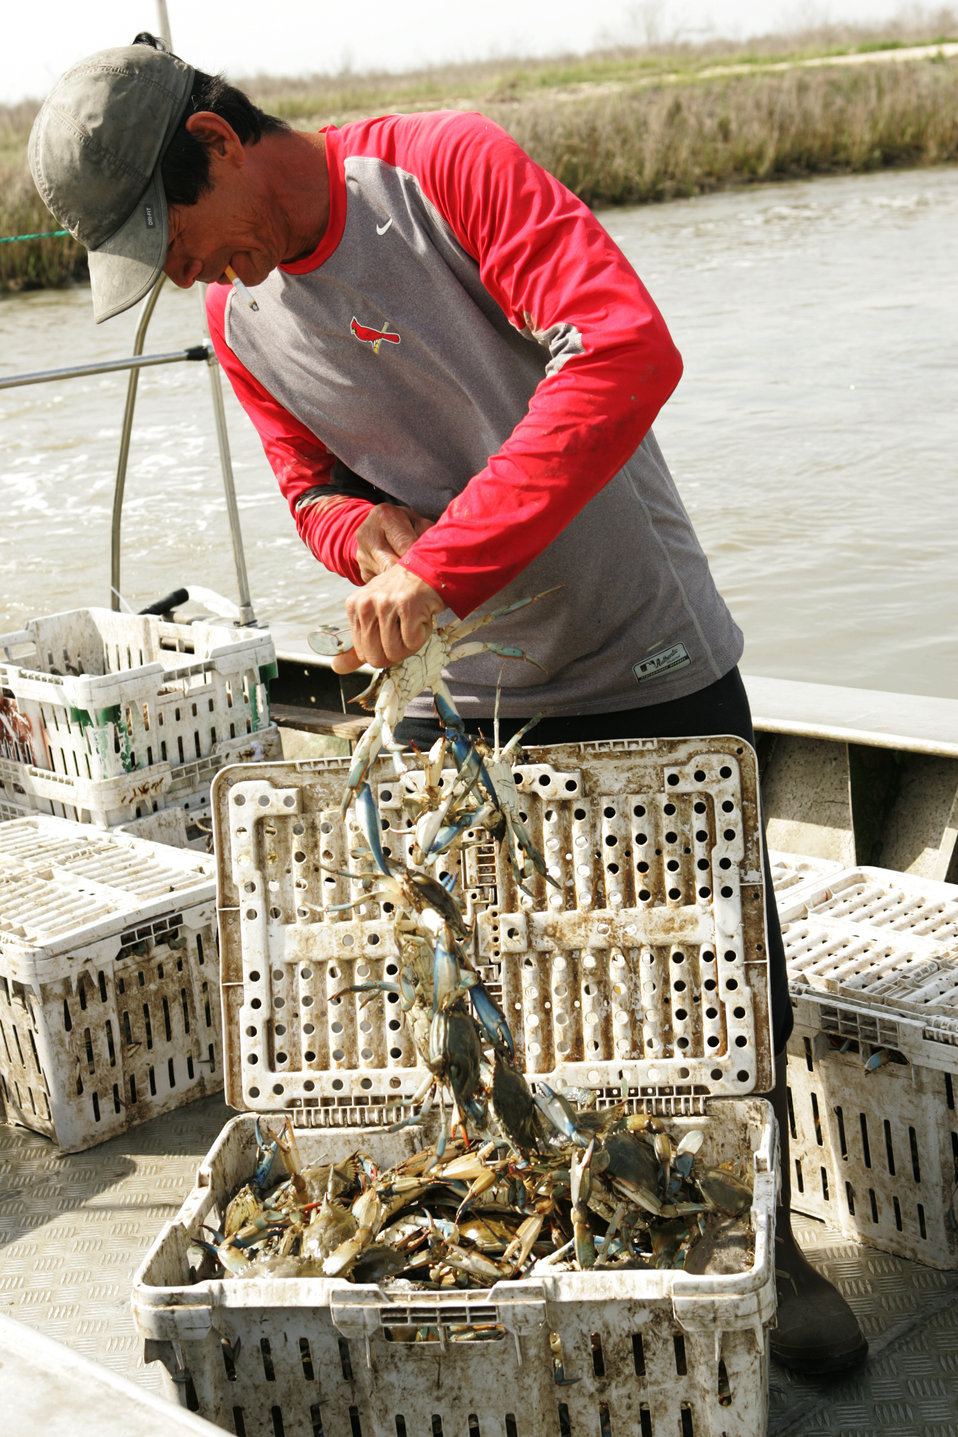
A full load of crabs makes the day complete!

A very fortunate visitor checks his catch of wonderful crabs.